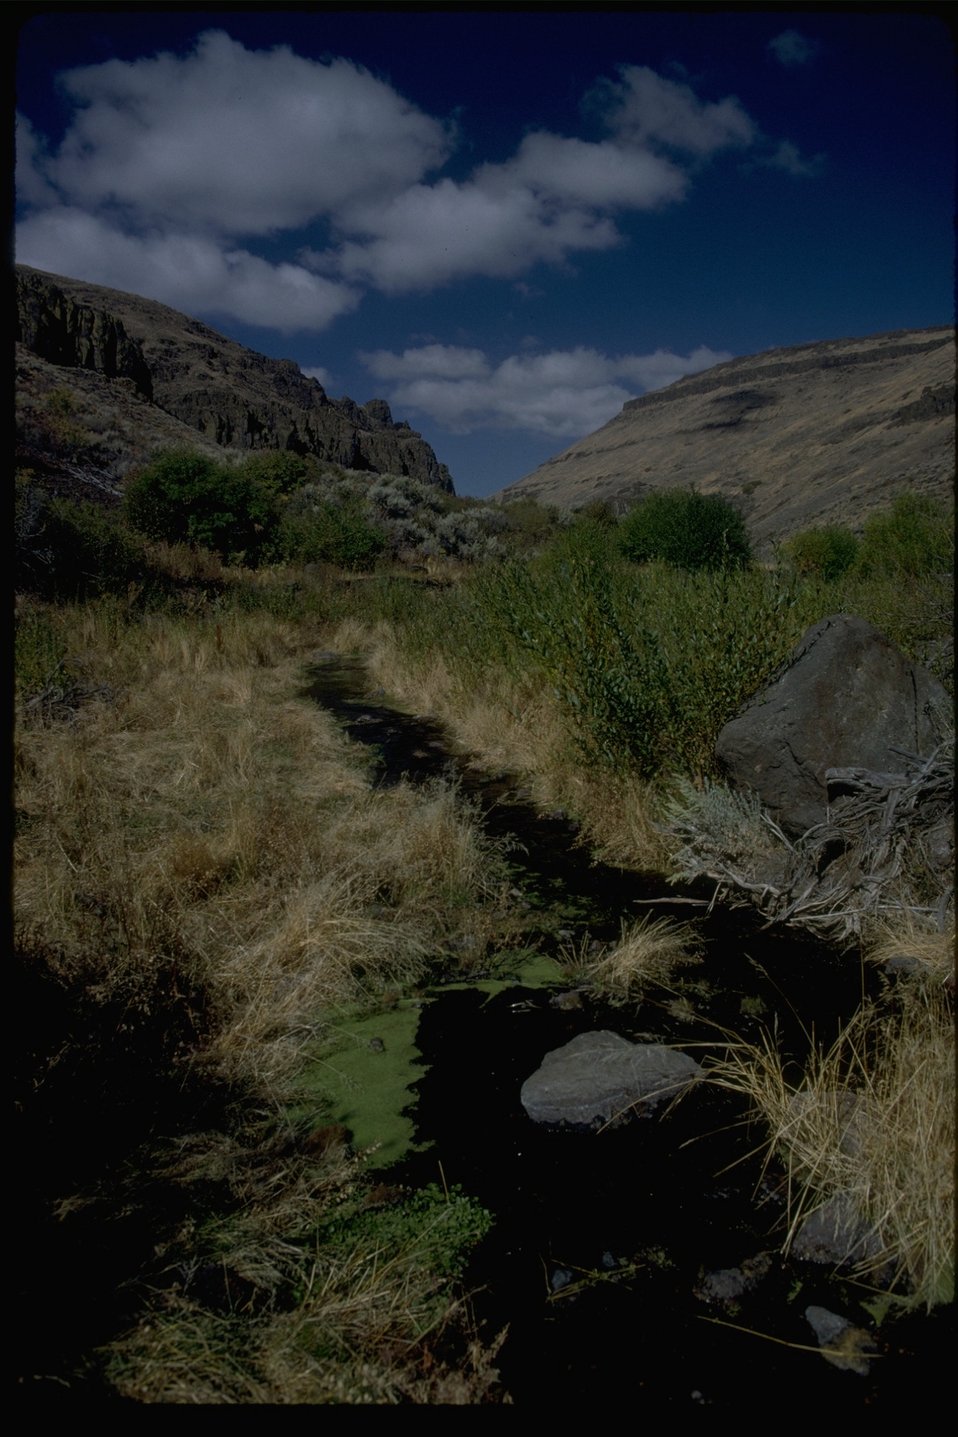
Riparian area along Fifteen Mile Creek with good willows and grass. OR 3-153